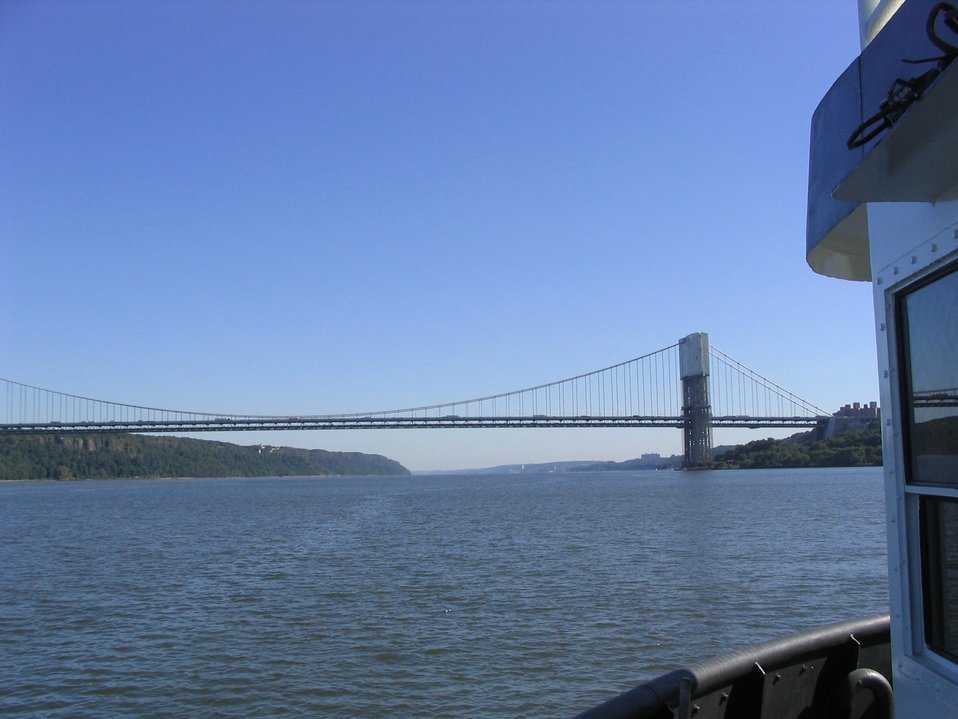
George Washington Bridge